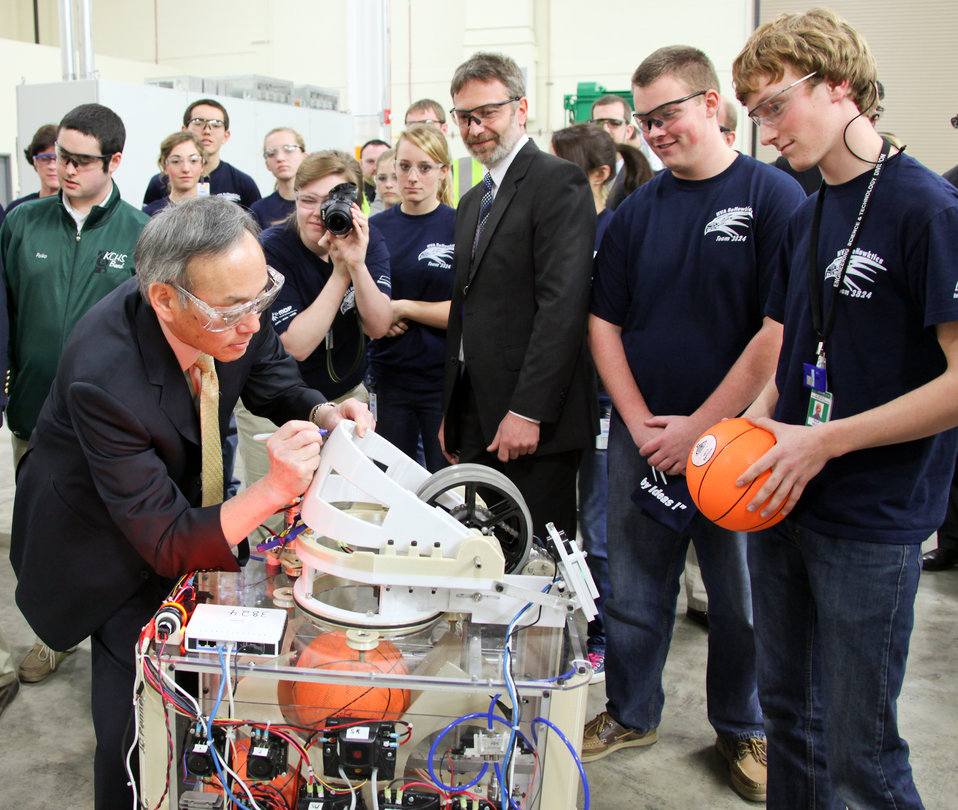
Developing the Scientists of Tomorrow

Energy Secretary Steven Chu adds his signature to FIRST Robotics Competition entry from Hardin Valley Academy, Knoxville, TN. The robot was created using additive manufacturing as part of STEM -- Science, Technology, Engineering, and Mathematics -- education outreach at the Energy Department's Manufacturing Demonstration Facility.